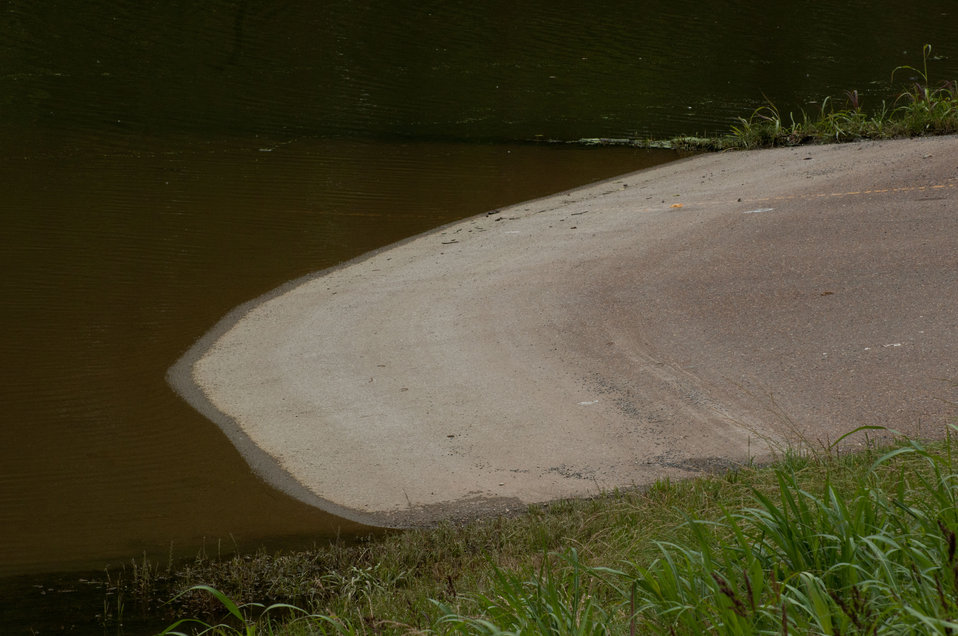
Floods waters from Mississippi River inundated Tunica Cutout, MS on Sunday, May 15. 2011. The entire population was relocated nearby to the protected side of the levee.